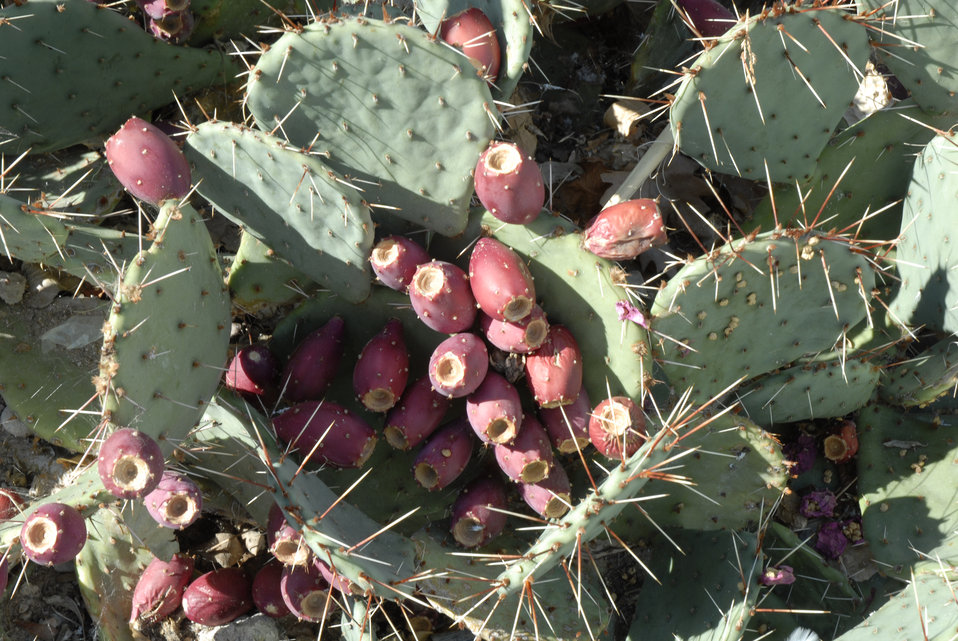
A cactus plant grows in Albuquerque, New Mexico on September 8, 2008.